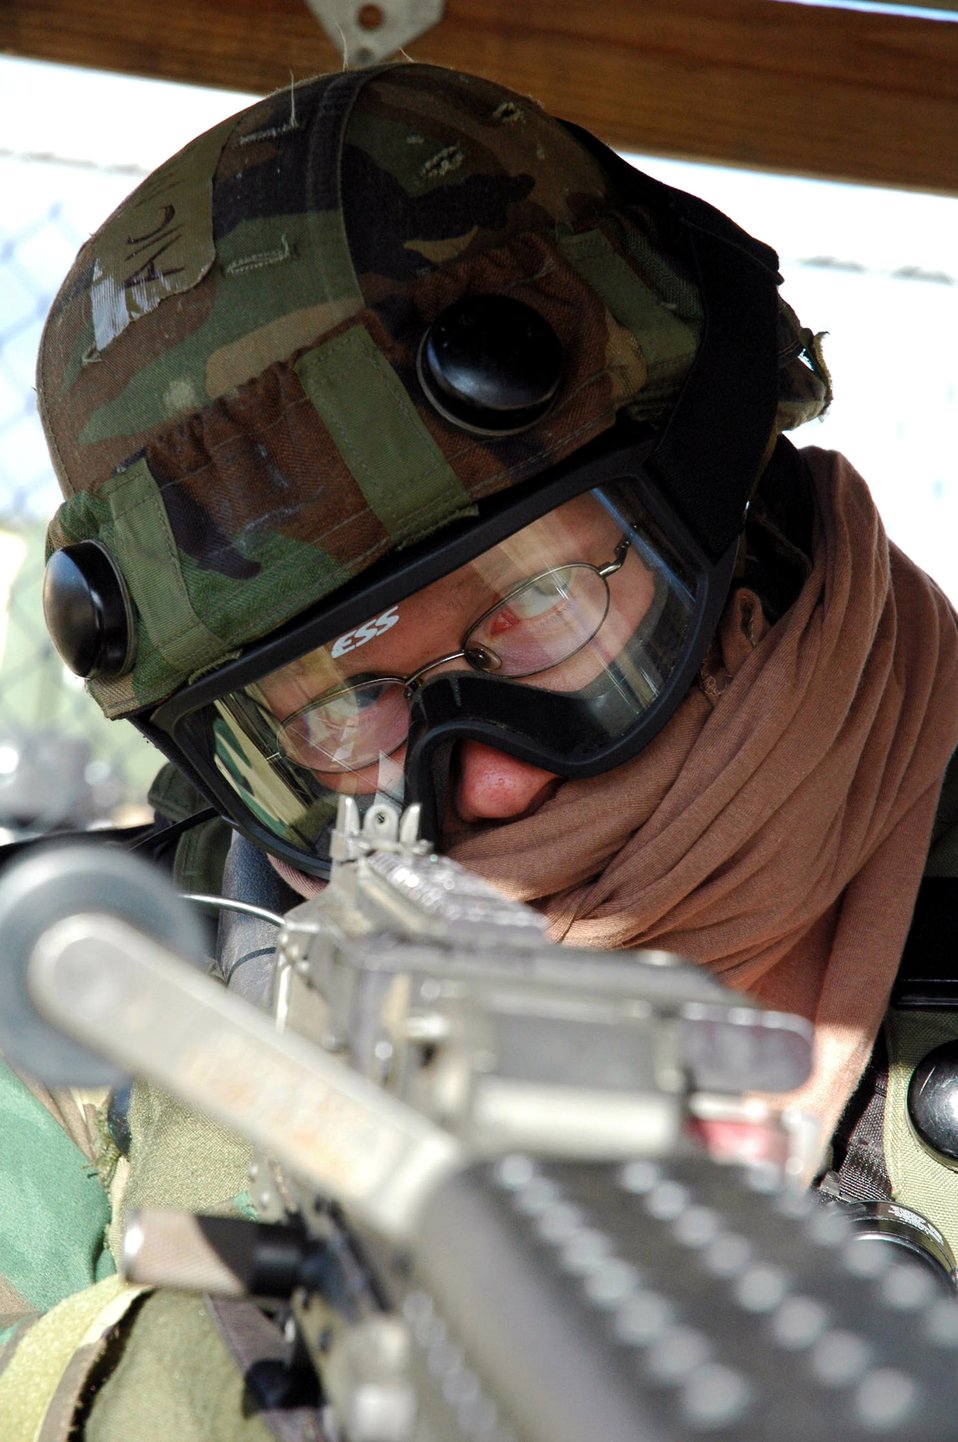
Warrior school

Airman 1st Class Tyler Mullenhauer reacts to a scenario for Exercise Eagle Flag 08-2 Jan. 20 at Naval Air Engineering Station Lakehurst, N.J. Airman Mullenhauer is a security forces Airman from the 60th Security Forces Squadron from Travis Air Force Base, Calif. The exercise is operated by members of the Air Force Expeditionary Center's Expeditionary Operations School and 421st Combat Training Squadron at Fort Dix, N.J.